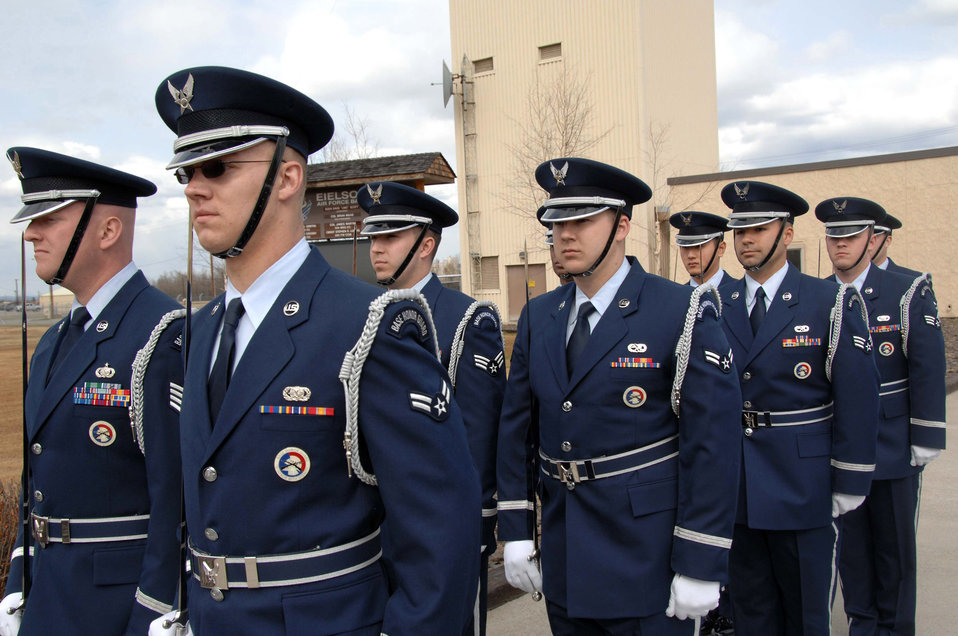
SECAF sees bright future for Eielson Airmen

The 354th Fighter Wing Honor Guard awaits the arrival of the Secretary of the Air Force Michael W. Wynne May 8 at Eielson Air Force Base, Alaska. The 21st secretary of the Air Force toured the Pacific Region to introduce his top priorities for the Air Force -- winning the war on terrorism, fostering mutual integrity and respect, and revitalizing the service's aging infrastructure and fleet.